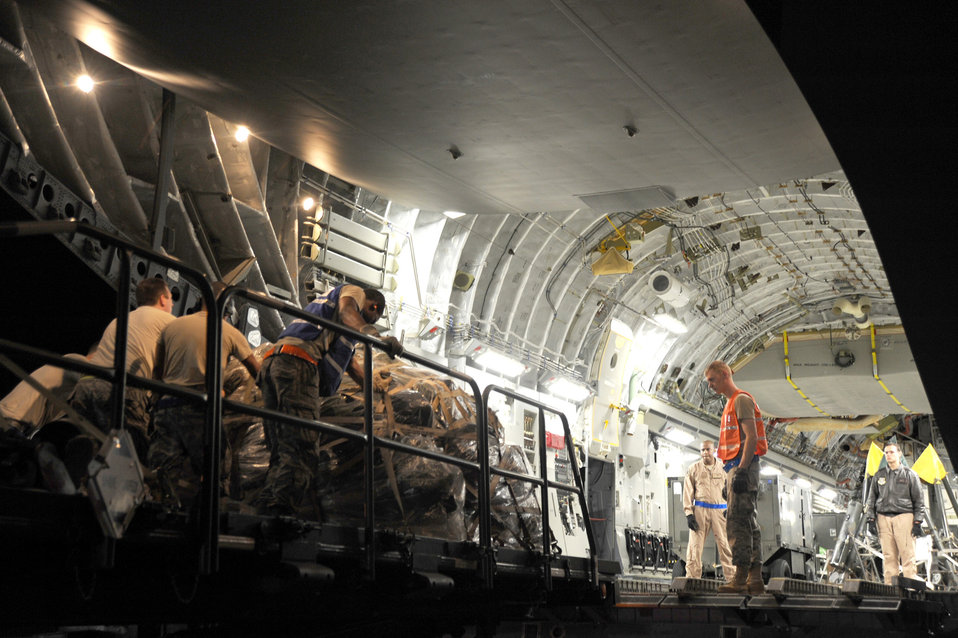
McConnell AFB Airmen take flight to support Libya operation

Airmen load equipment into a C-17 Globemaster III that will carry cargo and Airmen to support Operation Odyssey Dawn March 20, 2011, at McConnell Air Force Base, Kan.